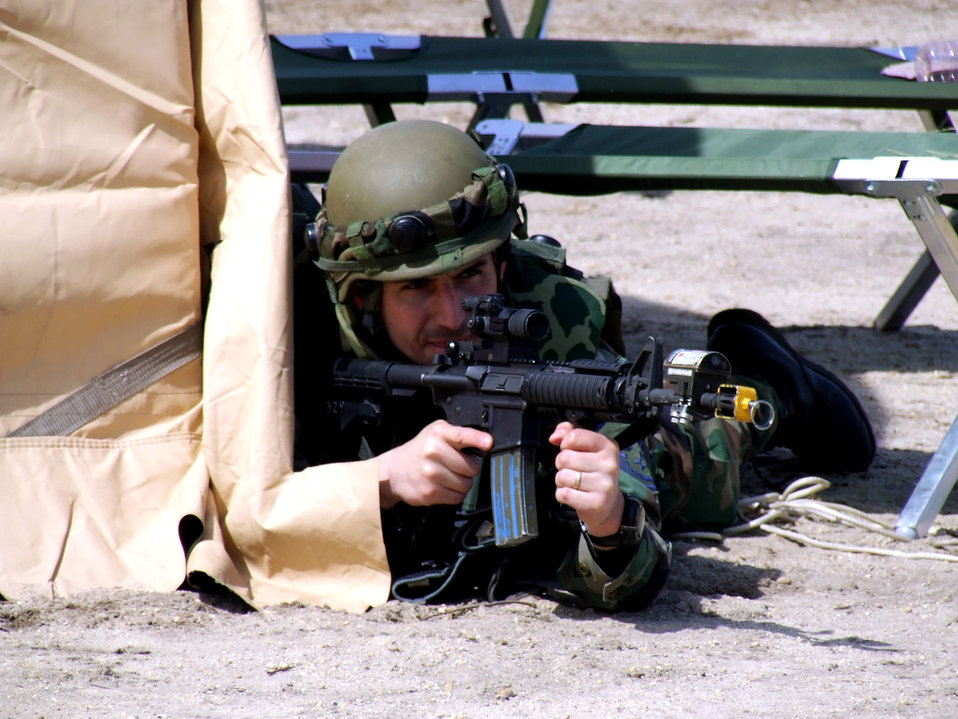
Eagle Flag prepares participants for real-world success

Senior Master Sgt. Randy Perrault responds to a scenario during operations for Air Force Exercise Eagle Flag 07-4 April 21 at Naval Air Engineering Station Lakehurst, N.J. The exercise is operated by the U.S. Air Force Expeditionary Center's 421st Combat Training Squadron. Sergeant Perrault is assigned to the 818th Contingency Response Group at McGuire Air Force Base, N.J.